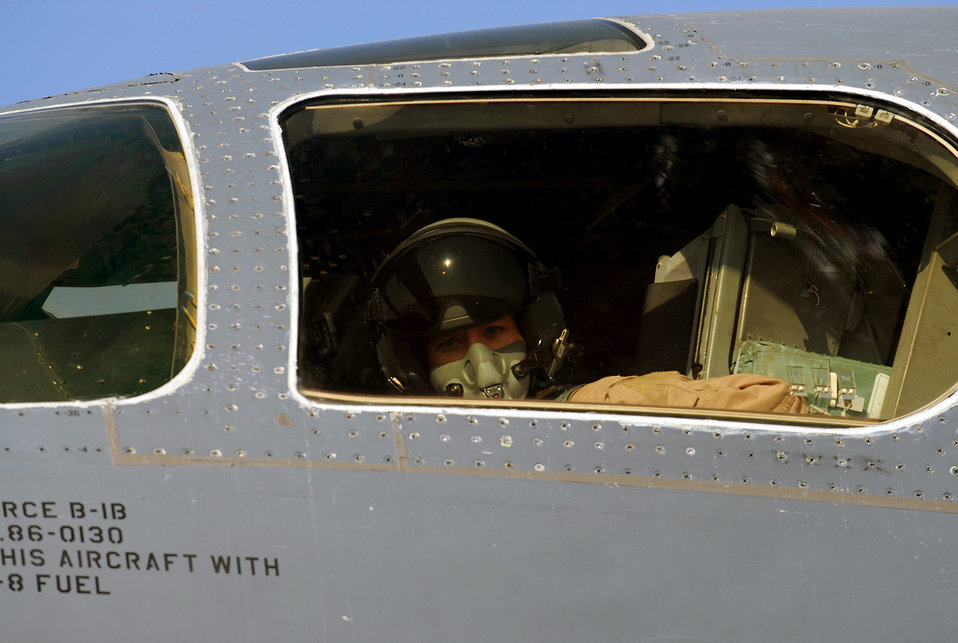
Getting a B-1B ready to launch

Capt. Crystal Powers settles into the pilot's seat of the B-1B Lancer bomber she will fly on a mission Dec. 29. Captain Powers is an aircraft commander with the 9th Expeditionary Bomb Squadron at an air base in Southwest Asia.